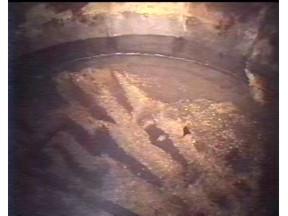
Hanford tank cleanup activities

Photo of EM cleanup activities within tank C-203 at Hanford, WA.